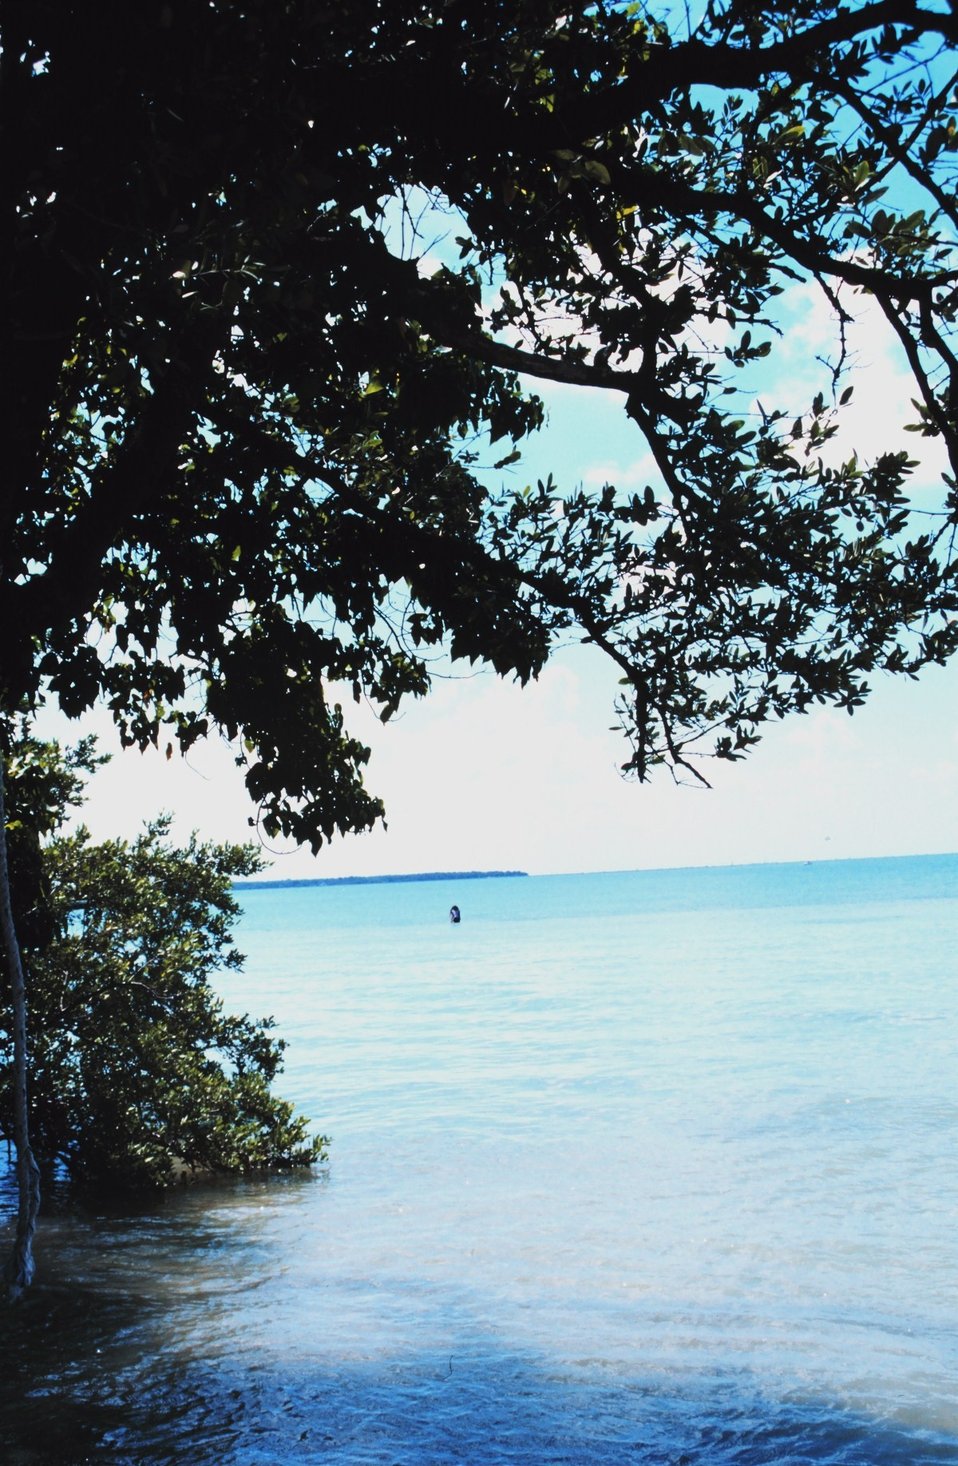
A solitary fisherman casts his net in the waters off of Key Biscayne